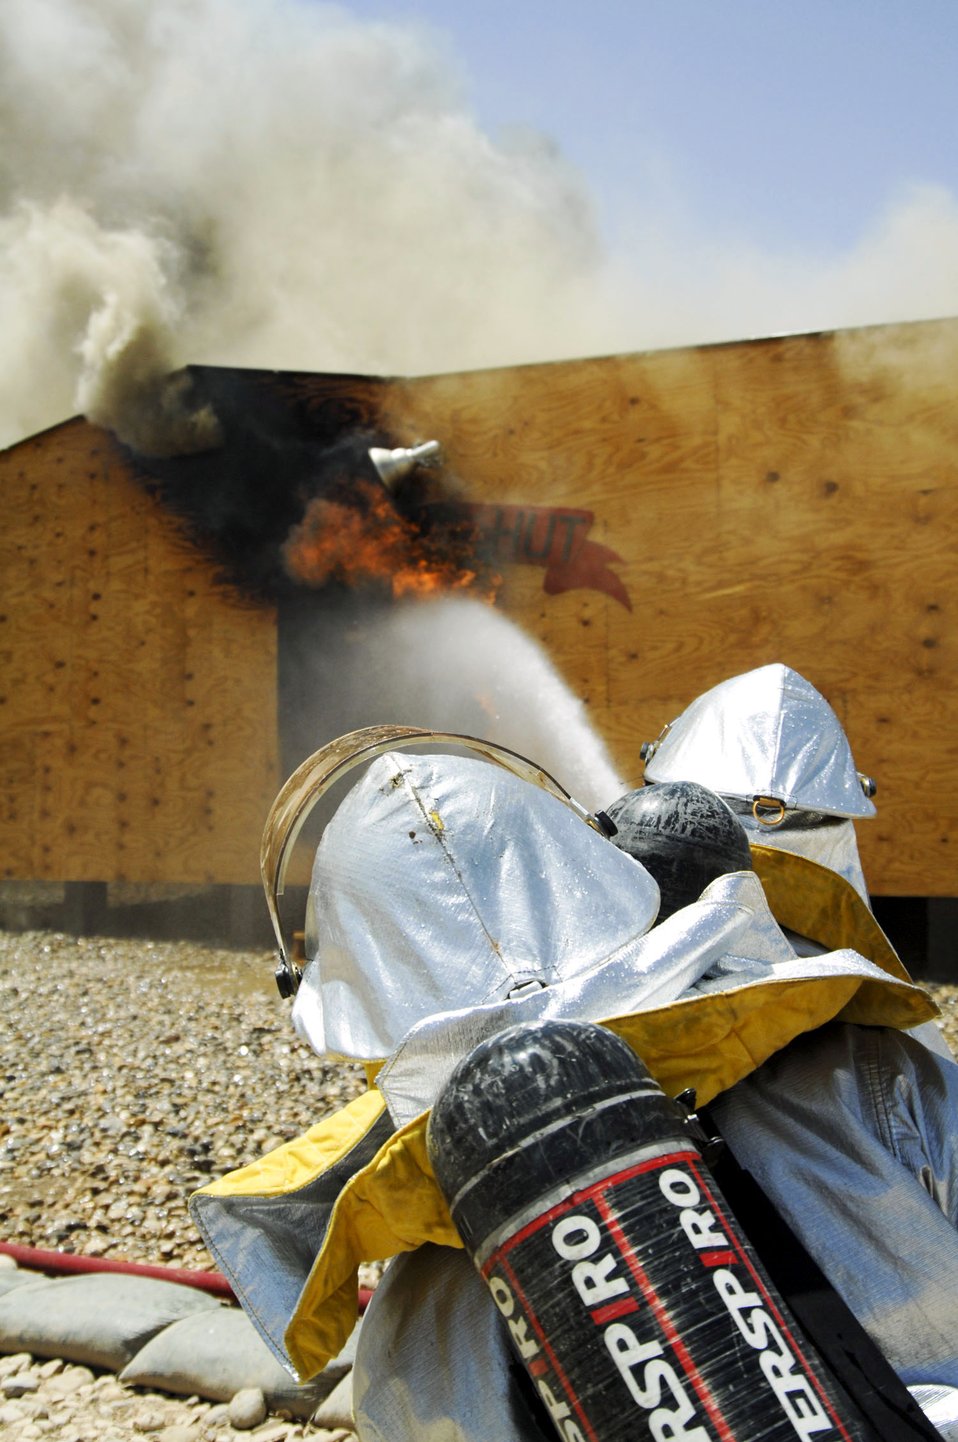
Fire fight in Iraq for the Army

Two firefighters perform an exterior attack on a fire in the Army Motor Pool June 19 on Camp Adder, Iraq. Due to munitions contained in the building and no potential for loss of life, the firefighters switched to defensive operations for the blaze using six trucks to keep it under control and confined to the building. The firefighters are from the 407th Expeditionary Civil Engineer Squadron at Ali Air Base, Iraq.